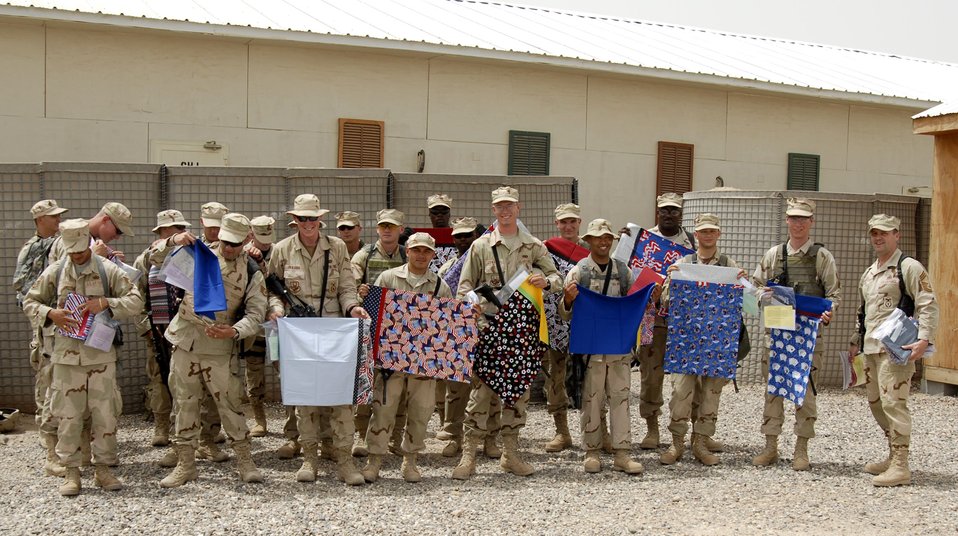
Operation Pillowcase brings piece of home to Airmen

Members of the 886th Expeditionary Security Forces Squadron hold up pillowcases made and donated by the community of Concord, Calif., April 24 at Camp Bucca, Iraq. Operation Pillowcase gave members of the 886th ESFS a reminder of home. The project was spearheaded by Deborah Burrow, mother of Airman 1st Class Paul Beasley who is an 886th ESFS member.